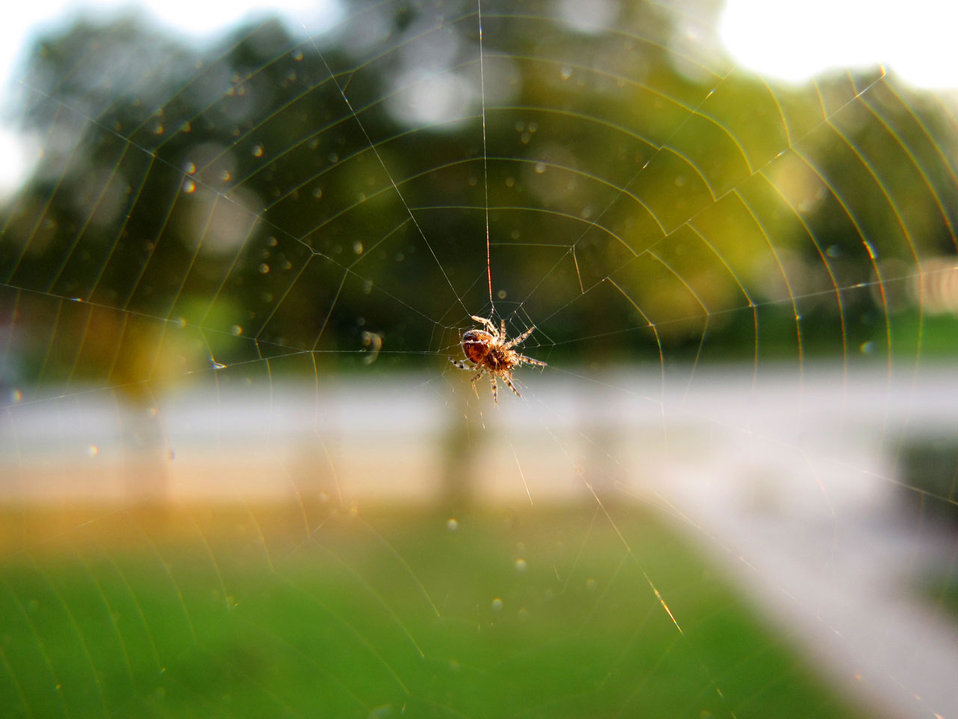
Spider on the web.